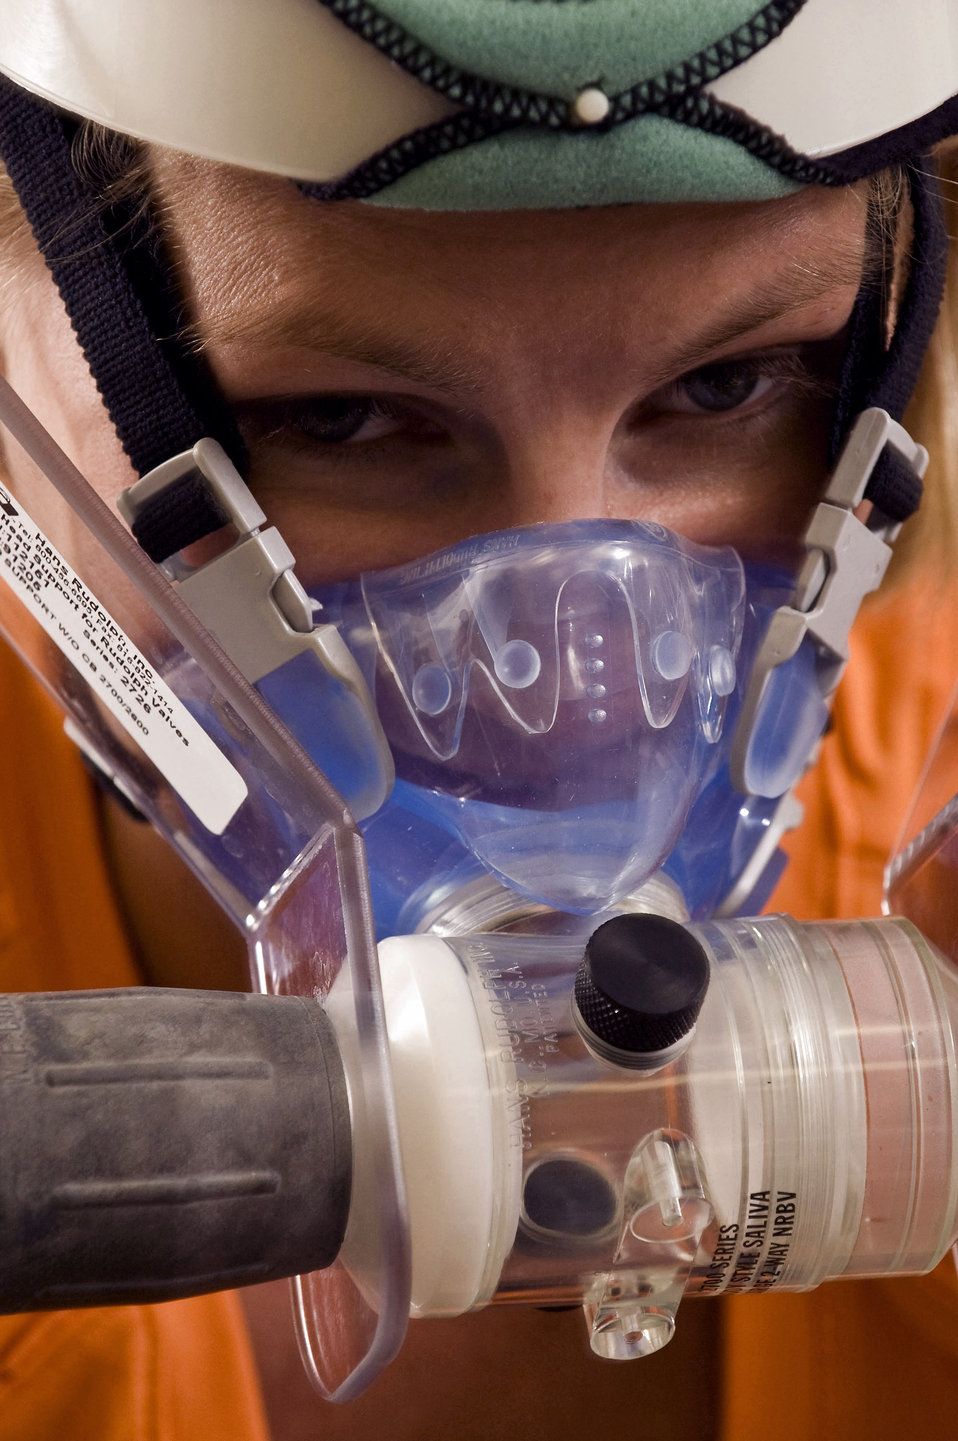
Studying human performance

Kassi Micak participates in the citrulline malate study conducted by Air Force Research Laboratory officials Aug. 19 at Brooks City-Base, Texas. Citrulline malate has shown to increase lactate threshold and VO2 Max in healthy humans and is being investigated, along with other nutritional supplements and training aids, by AFRL officials to improve cognitive and physical performance of battlefield Airmen. Ms. Micak, a competitive cyclist based in San Antonio, volunteered for the study.